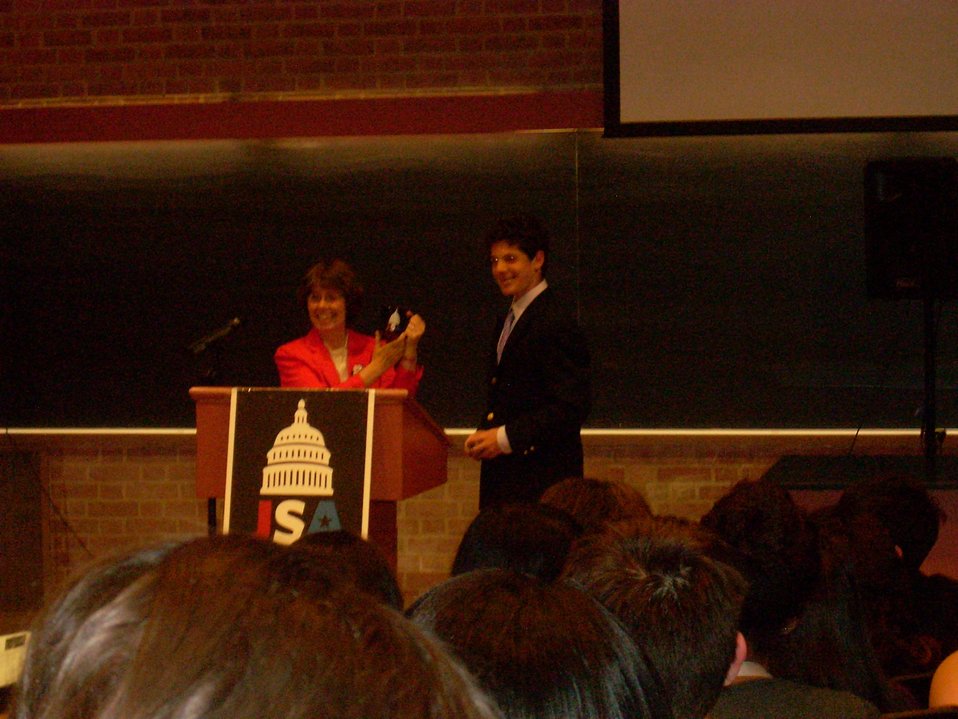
Press Office Coleman Speaks With High School Students

Maryruth Coleman, Director of the Press Office for the Bureau of Economic, Energy and Business, speaks with high school students interested in what Economic Officers do in the Foreign Service at Georgetown University in Washington, D.C., on June 30, 2011.